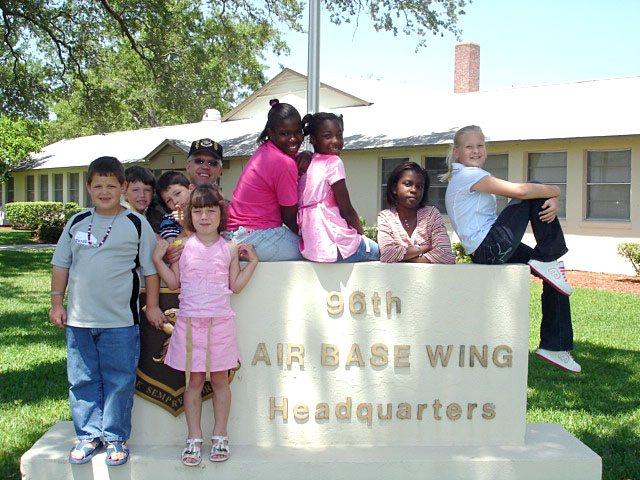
Take Our Daughters and Sons to Work Day

Col. Dean R. Clemons, 96th Air Base Wing vice commander, peaks out from behind a group of children visiting Eglin Air Force Base, Fla., during the wing's Take Our Daughters and Sons to Work Day event on Thursday, April 27, 2006. Pictured are Matheau Swank and Savannah Hatch (in front) and Isaac Clemons, Aiden O'Connor, Colonel Clemons, Brianna Heath, Mariah Parsons, Jasmin Scaife and Chelsea Grant.